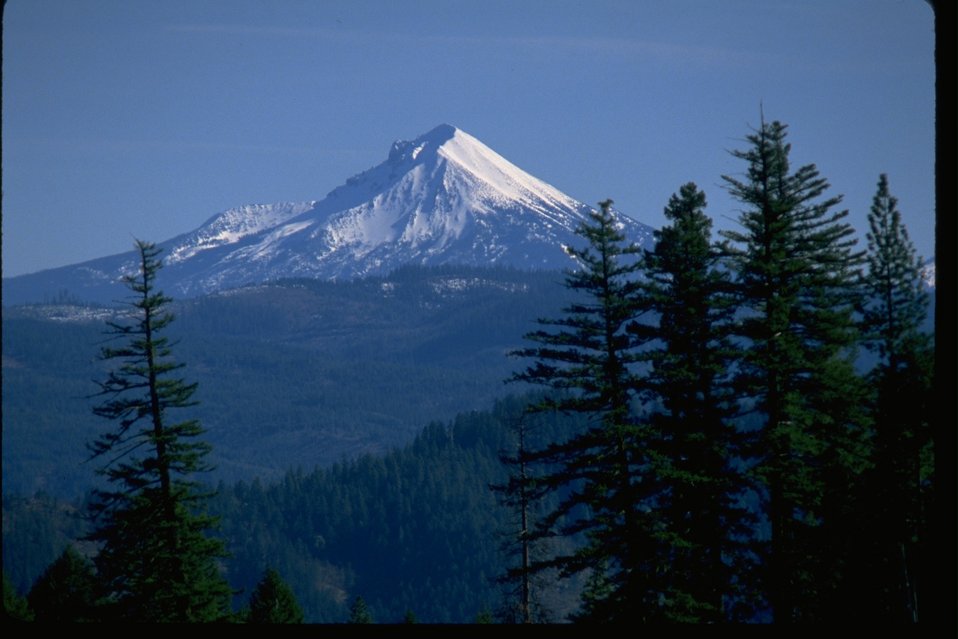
Scenic view of Mount Mcloughlin.